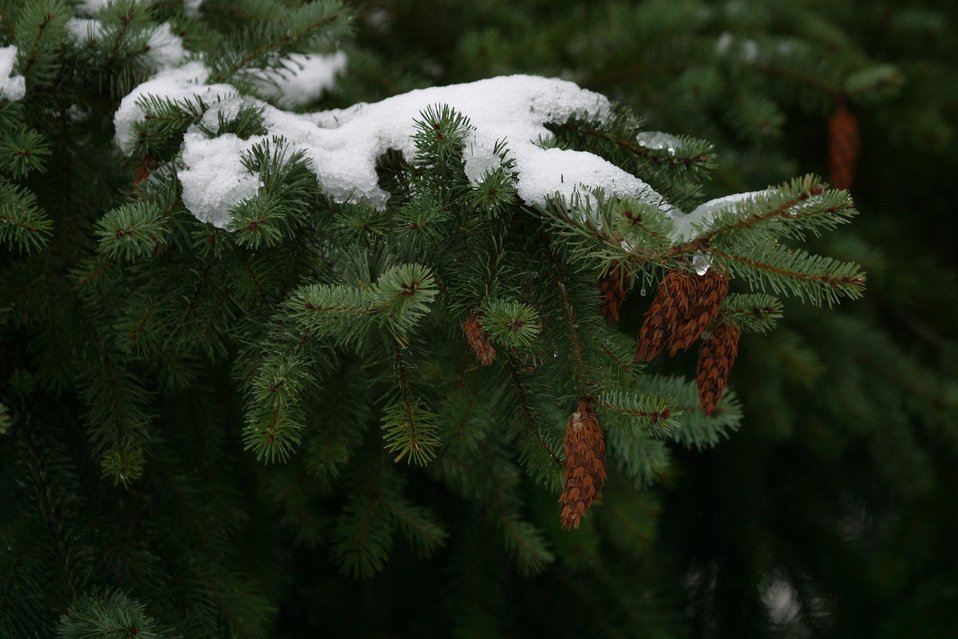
Snow and ice on Douglas Fir Bows and cones during the storm of January 2004.